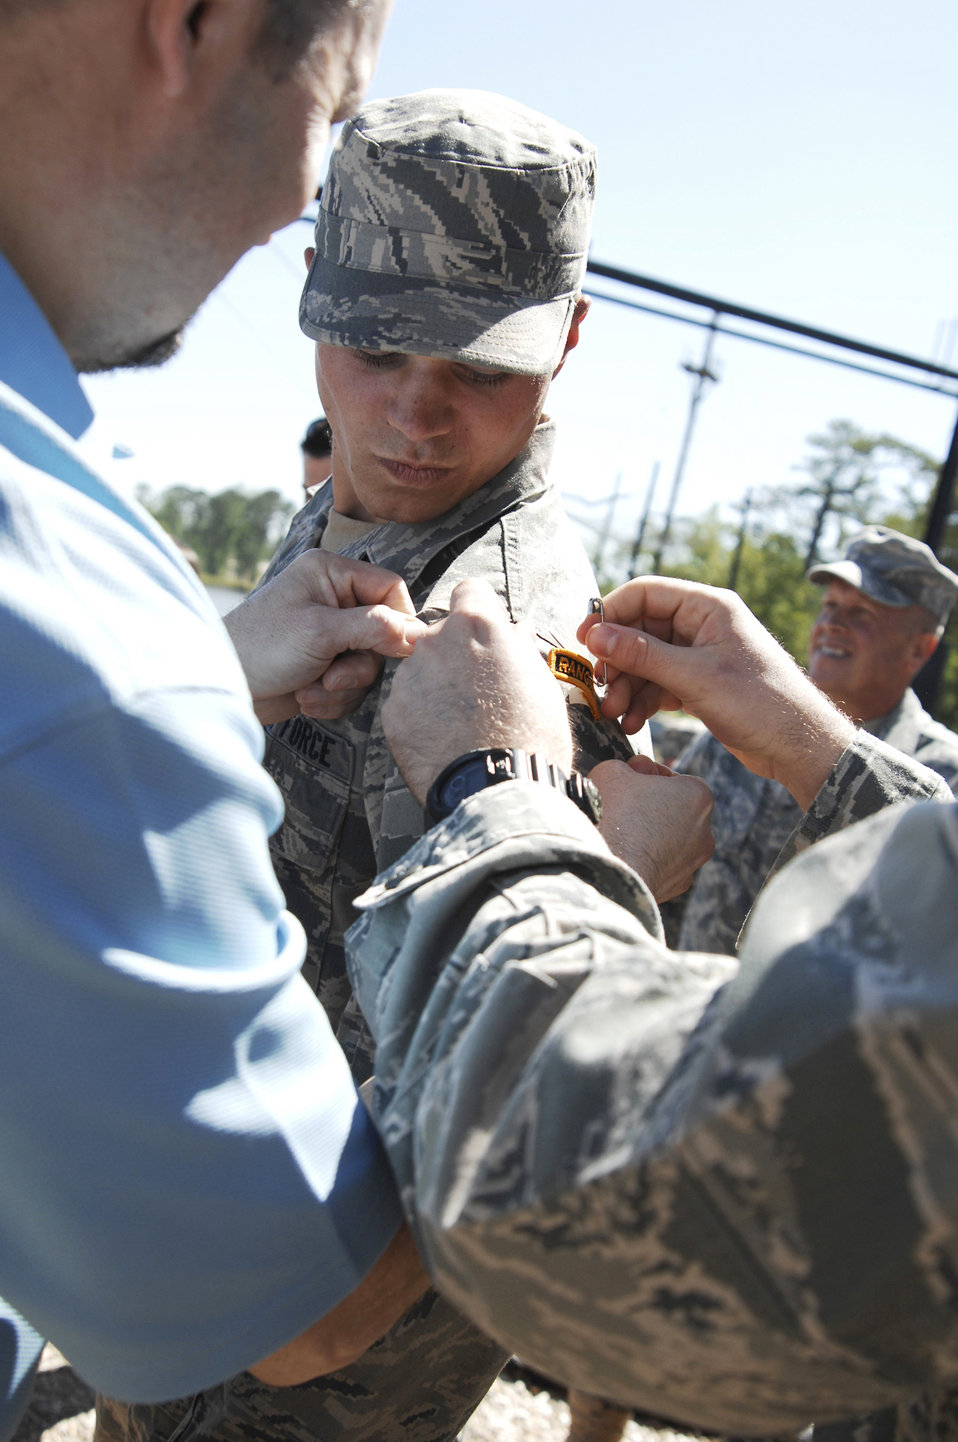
A1C Garner

Airman 1st Class Matthew Garner has his Ranger tab pinned on by his father, Don Garner, and mentor, Staff Sgt. Seth Hunter, April 29, 2011. after completing the intense 61-day U.S. Army Ranger School at Ft. Benning, Ga. Airman Garner was the only Airman to make it through the course for this class and is one of fewer than 300 to make it since the school opened in the 1950s. Airman Garner is assigned to the 823rd Base Defense Squadron.